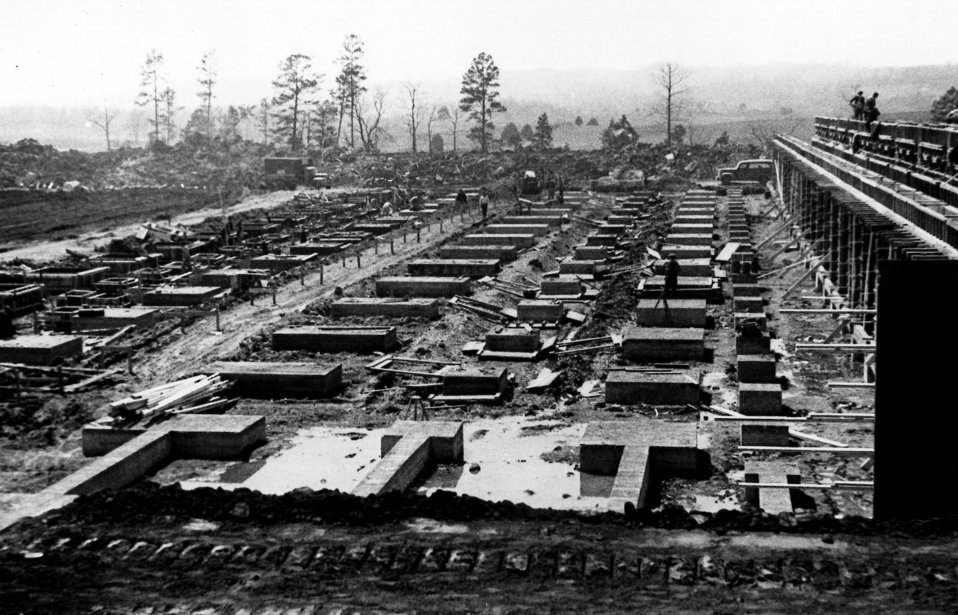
K-25 Footing Oak Ridge

221-17 DOE photo by Ed Westcott 4/6/44
Oak Ridge Tennessee